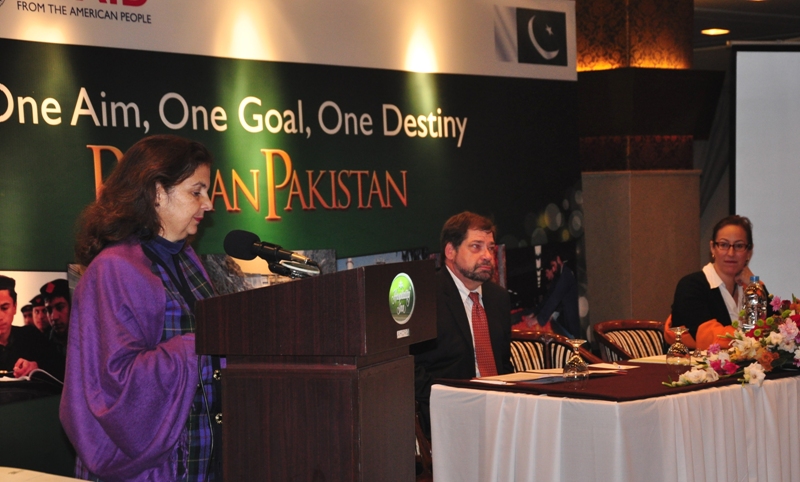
U.S. Consul General Nina Fite inaugurated the consultative workshop.